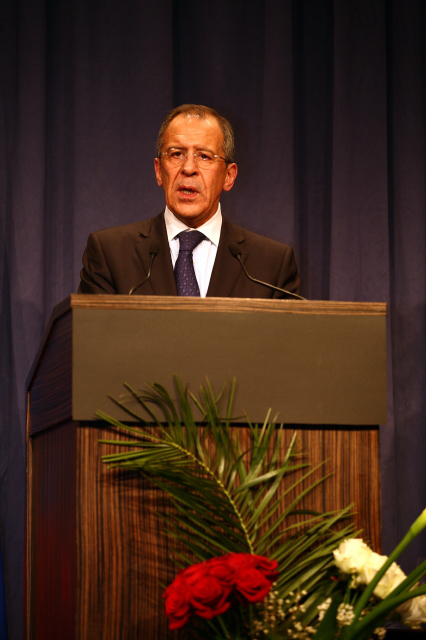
Press Conference With Russian Foreign Minister

Press conference after dinner meeting between U.S. Secretary of State Hillary Rodham Clinton and Russian Foreign Minister Sergey Lavrov in Geneva, Switzerland March 6, 2009.